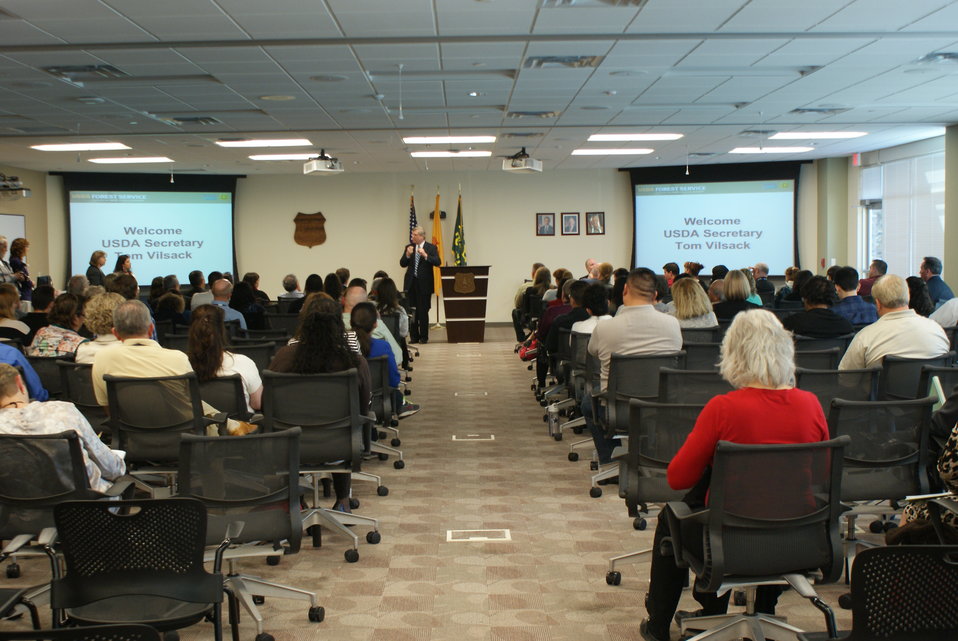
Agriculture Secretary Tom Vilsack holds a town hall meeting with U.S. Department of Agriculture (USDA) employees at the Albuquerque Service Center in Albuquerque, NM on Mar. 10, 2014. USDA photo M. Chavez.